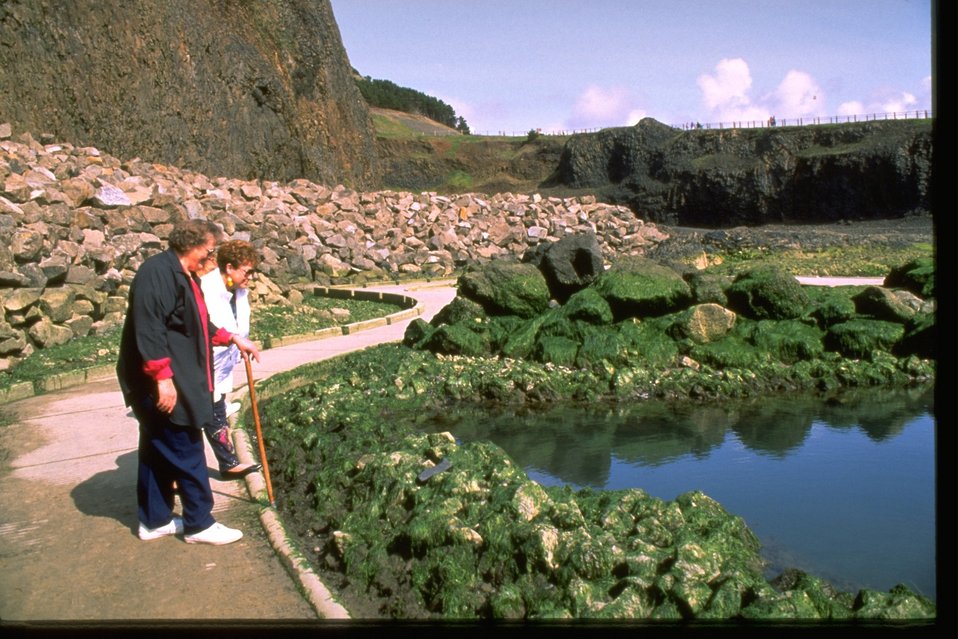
Programs at Yaquina Head Outstanding National Area accessible tidepools.